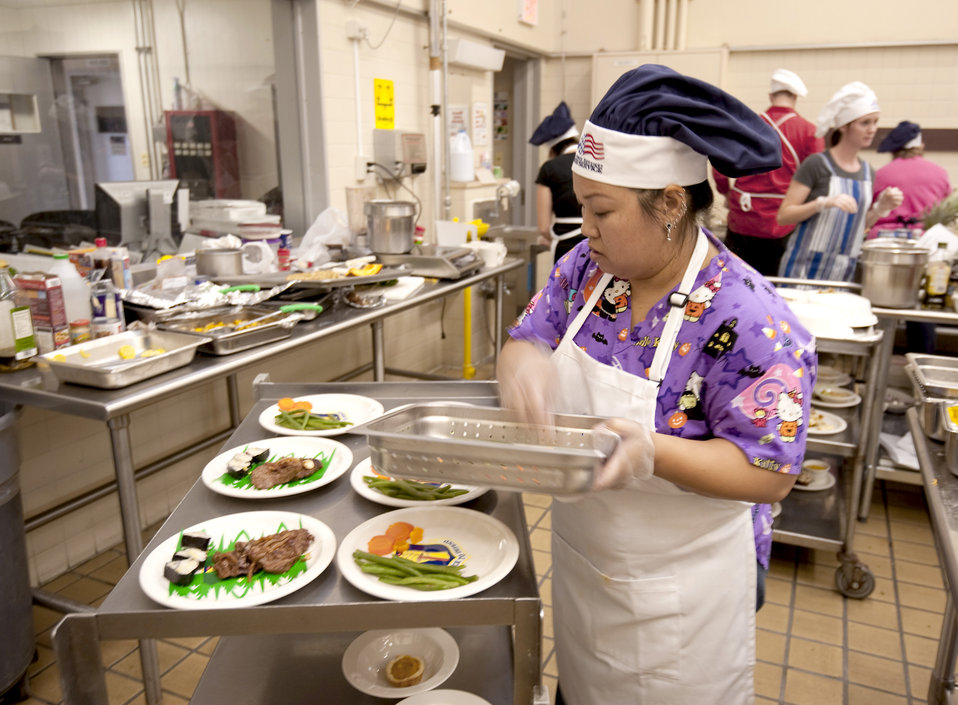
Iron Chefs

Jennifer Tengco, a Navy spouse, garnishes her edible creations for the